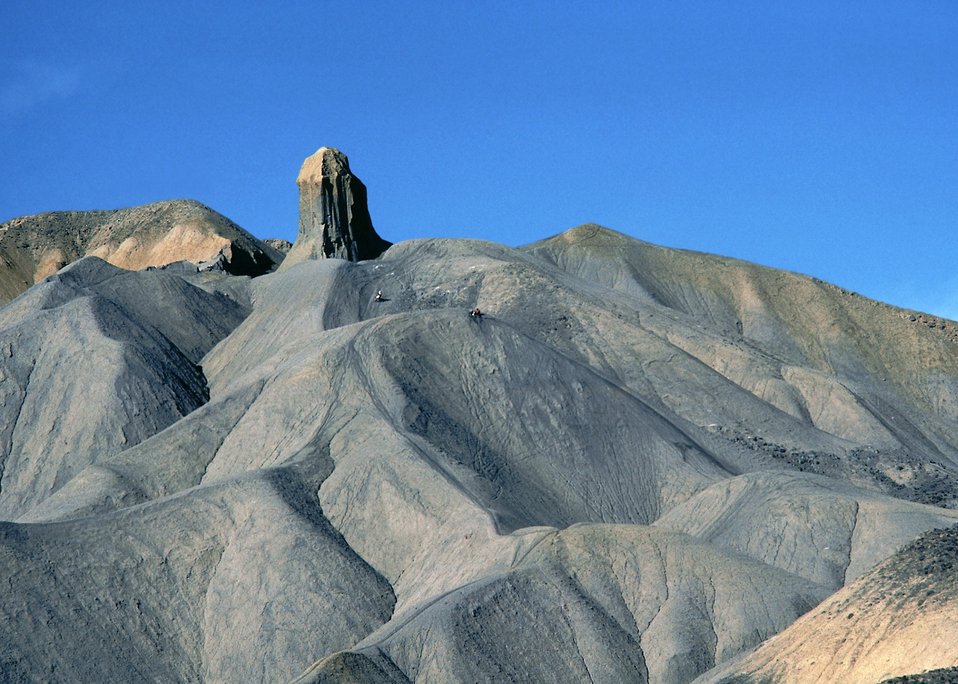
Camel Back Devil Thumb